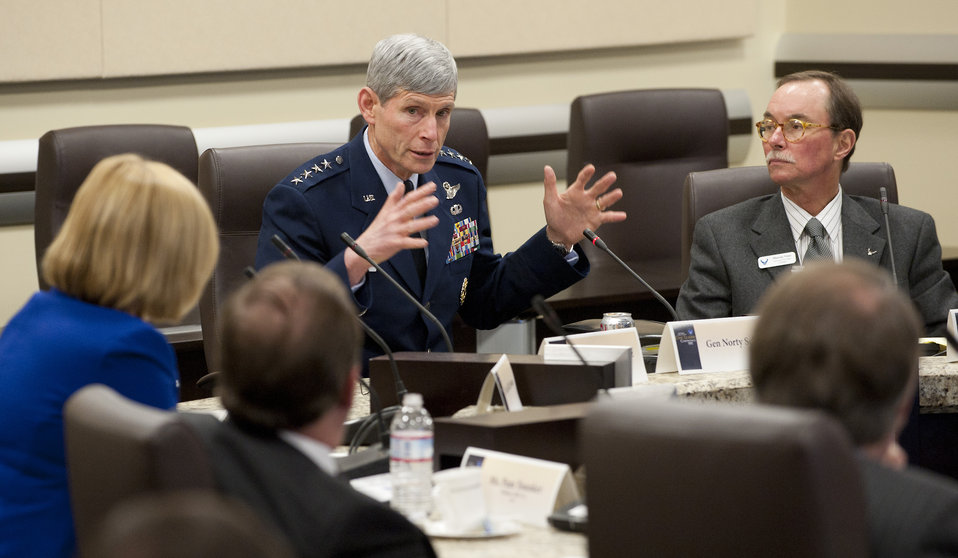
AF leaders meet with U.S. civic leaders

Air Force Chief of Staff Gen. Norton Schwartz (second from upper left) speaks with civic leaders representing communities from across the U.S. during a conference Jan. 31, 2012, at Joint Base Andrews, Md. The group of civic leaders will also visit Joint Base Eustis-Langley in Norfolk, Va., for a look at Air Combat Command.